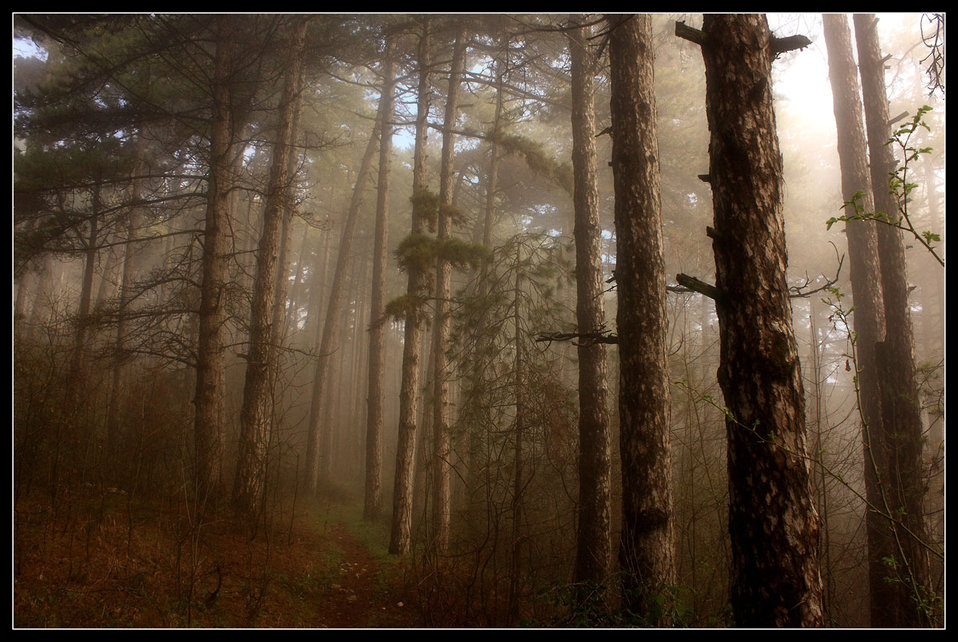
Trees

Forest in the fog.